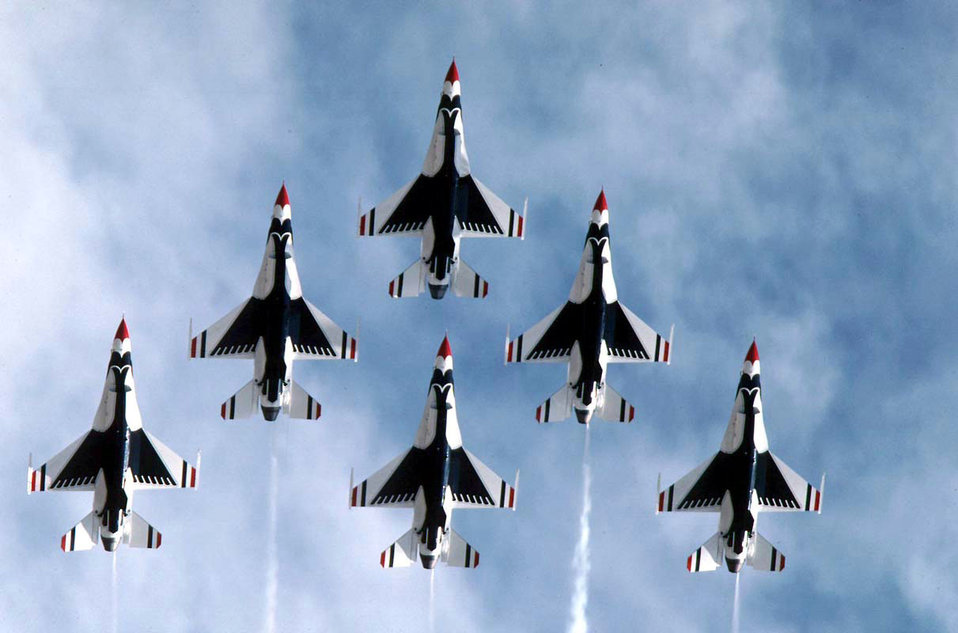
Thunderbirds

FILE PHOTO -- The U.S. Air Force Air Demonstration Squadron, the Thunderbirds, performs precision aerial maneuvers demonstrating the capabilities of Air Force high performance aircraft to people throughout the world. The squadron exhibits the professional qualities the Air Force develops in the people who fly, maintain and support these aircraft. The Thunderbirds squadron is an Air Combat Command unit composed of eight pilots (including six demonstration pilots), four support officers, three civilians and more than 130 enlisted personnel performing in 25 career fields. The Lockheed Martin (formerly General Dynamics) F-16 Fighting Falcon represents the full range of capabilities possessed by the Air Force's tactical fighters. This highly maneuverable multi-role fighter has proven itself to be one of the world's best precision tactical bombers and air-to-air combat aircraft. The only modifications needed to prepare the aircraft for its air demonstration role are installing a smoke-generating system in the space normally reserved for the 20mm cannon, and the painting of the aircraft in Thunderbird colors.